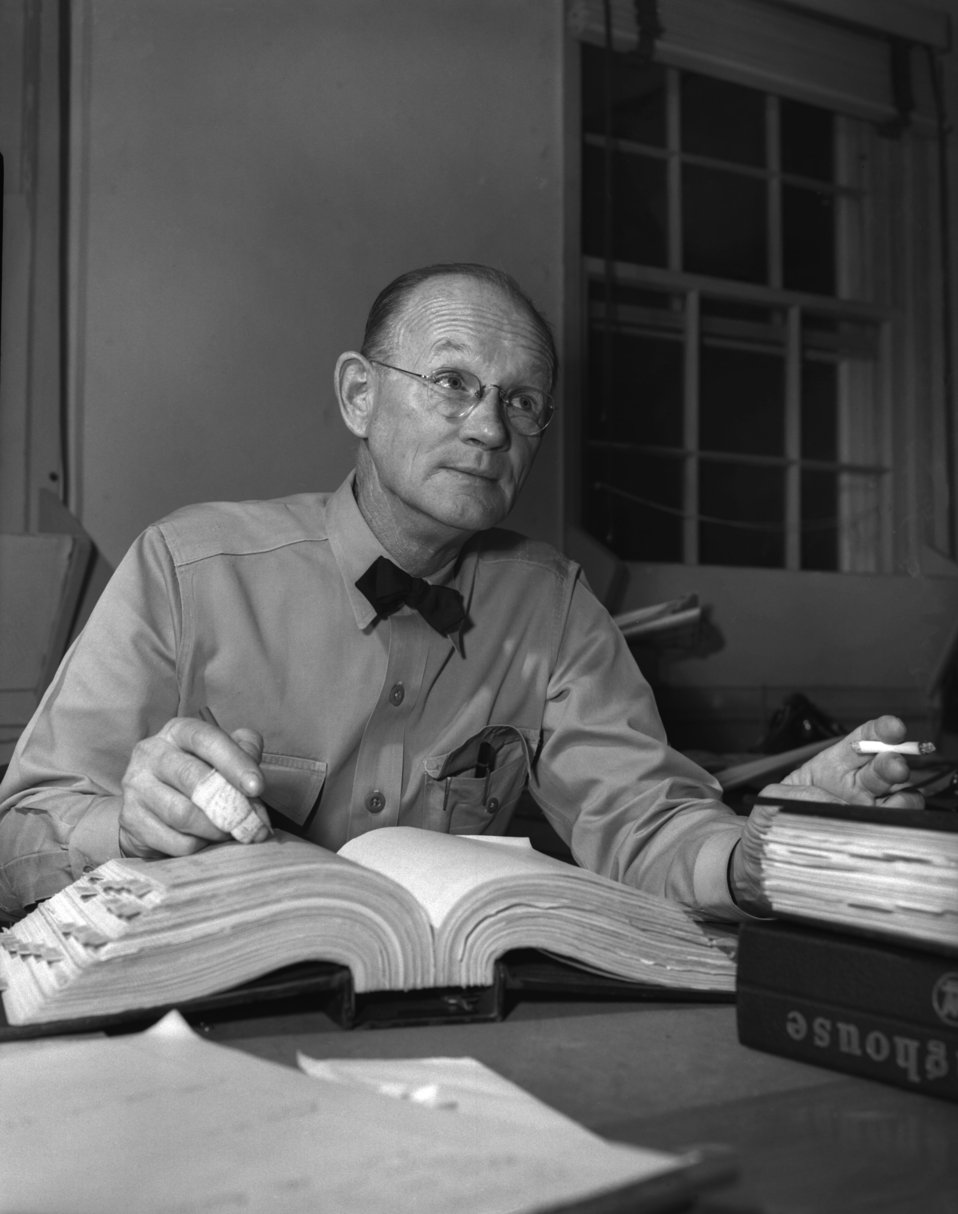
D.M. Clarke AEC Electrical Engineer Oak Ridge

3254-1 DOE photo Ed Westcott 1-16-1947 Oak Ridge Tennessee